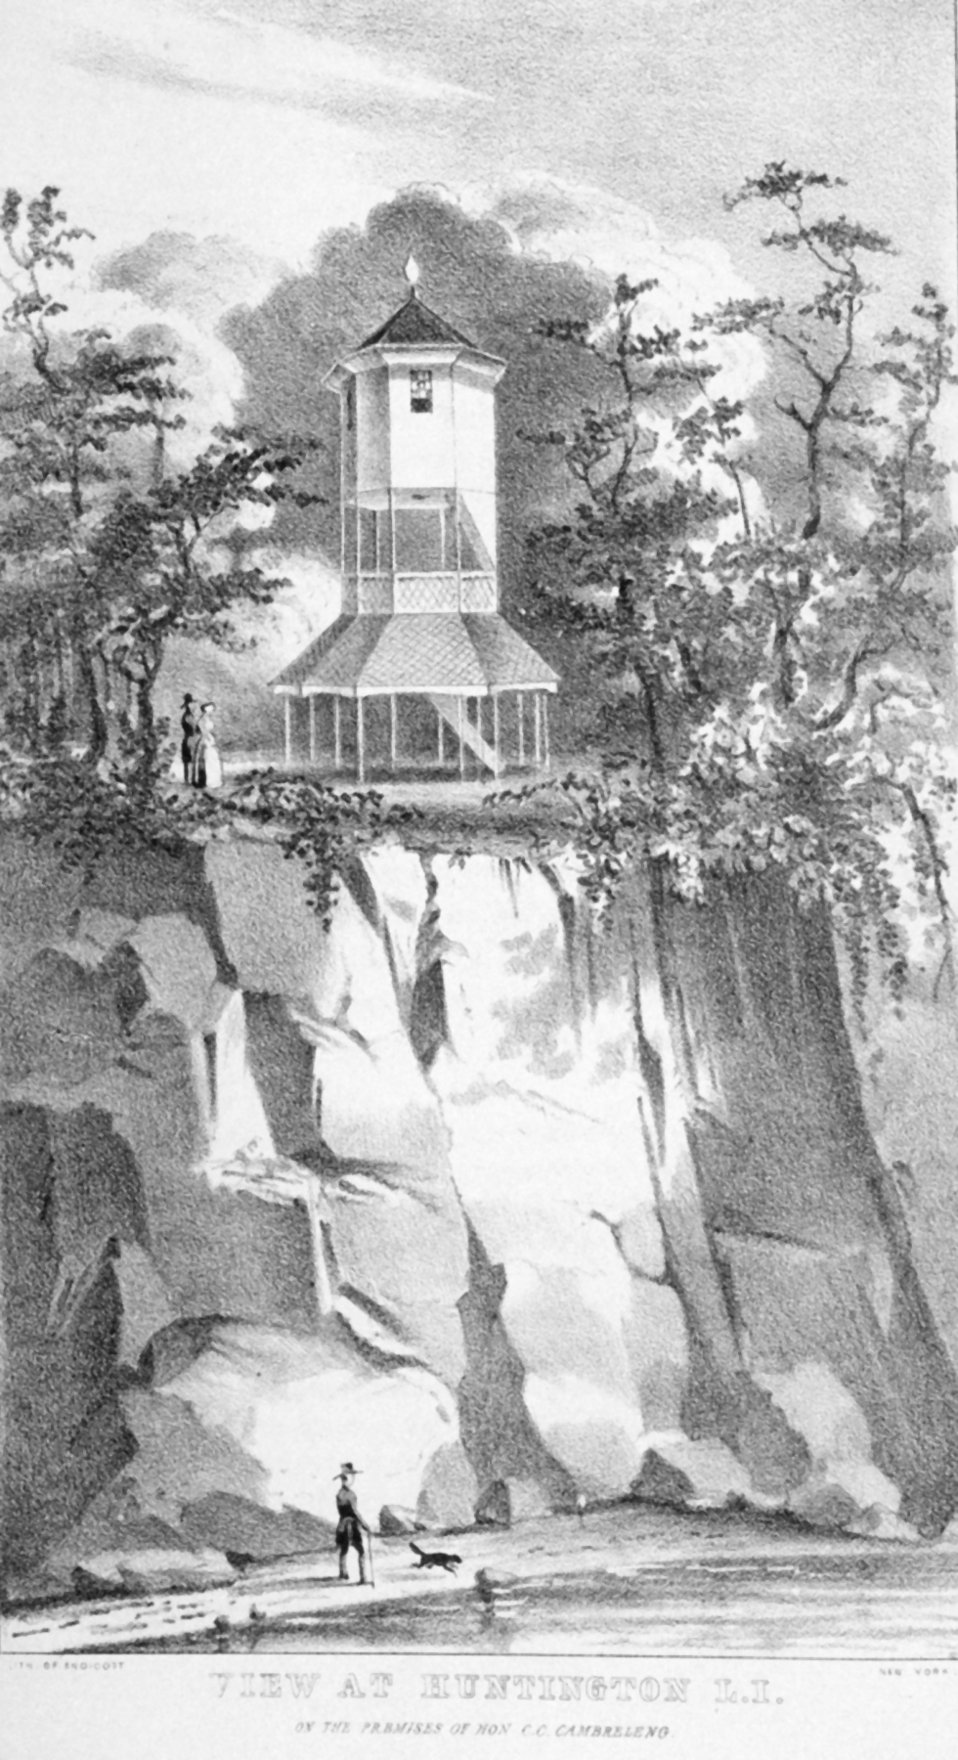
View at Huntington, Long Island on the premises of Hon. C. C. Cambreleng.